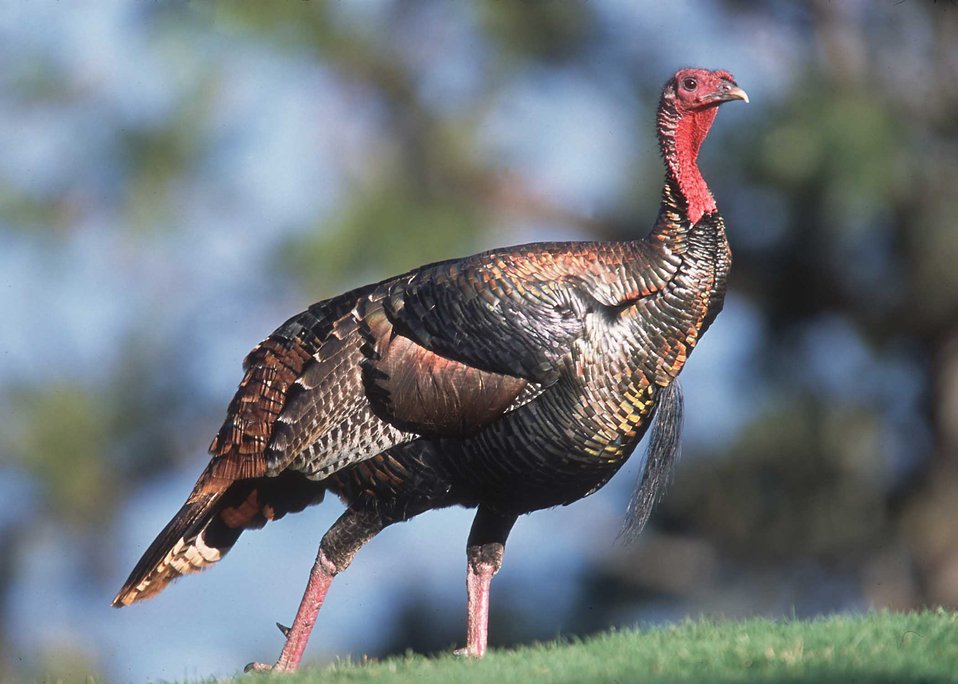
Wild turkey on Hawaii.